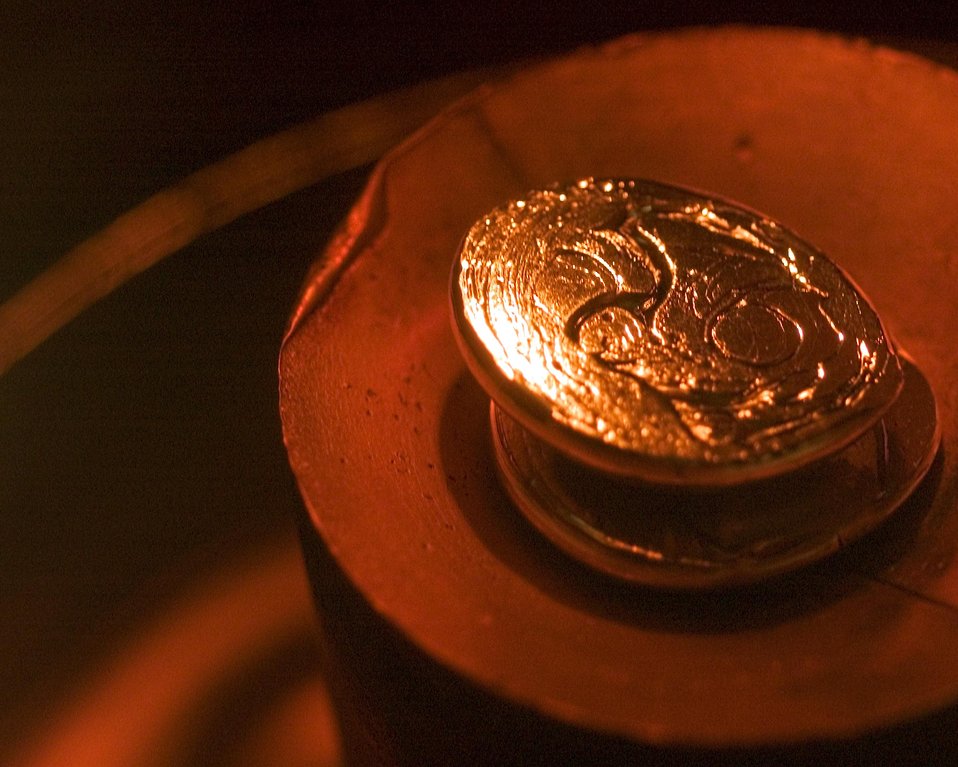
Ames Lab, an arc-cast alloy button is placed on a drop-cast mold. Results alloy melt - may ultimately - produce high-purity single crystals - researchers to study and better understand the properties of the materials.
The Plasma Lab furnace generates temperatures well in excess of 10,000 degrees celsius. The furnace can melt reactive metals and alloys without the need for crucibles to contain them, thus eliminating possible contamination from crucible materials.